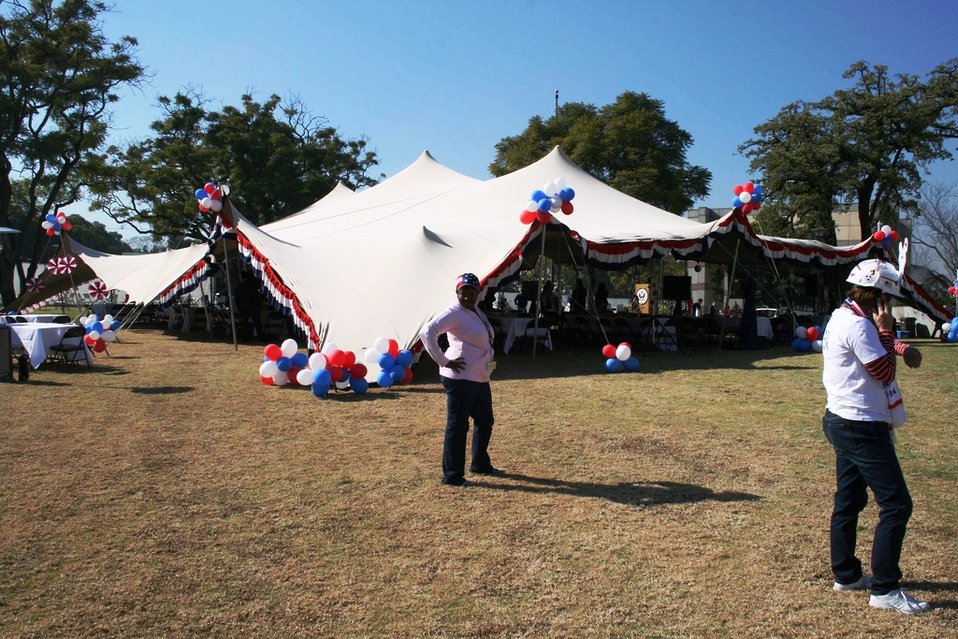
U.S. Embassy Pretoria Staff Prepare for Team USA Pep Rally

U.S. Embassy Pretoria staff prepare for the Team USA pep rally before the U.S. vs. Algeria World Cup match on June 23, 2010, in Pretoria, South Africa.